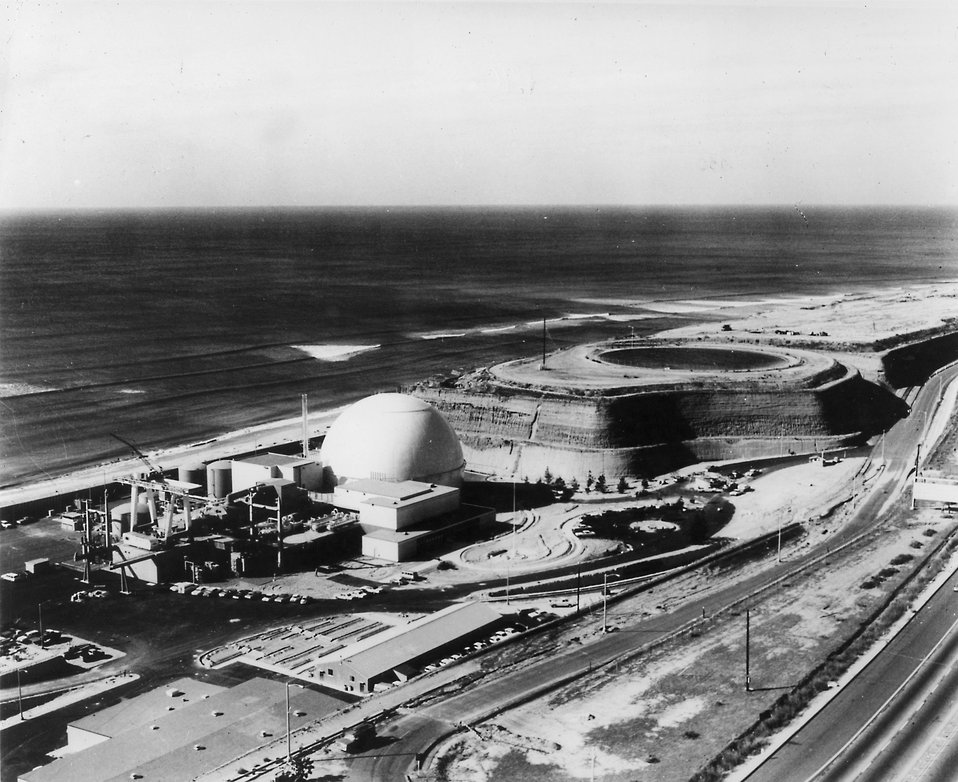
The San Onofre Nuclear Generating Station will provide 430,000 kilowatts of electricity for Southern California Edison Company and San Diego Gas & Electric Company- enough power to supply a city of well over half a million population. Circa 1968.